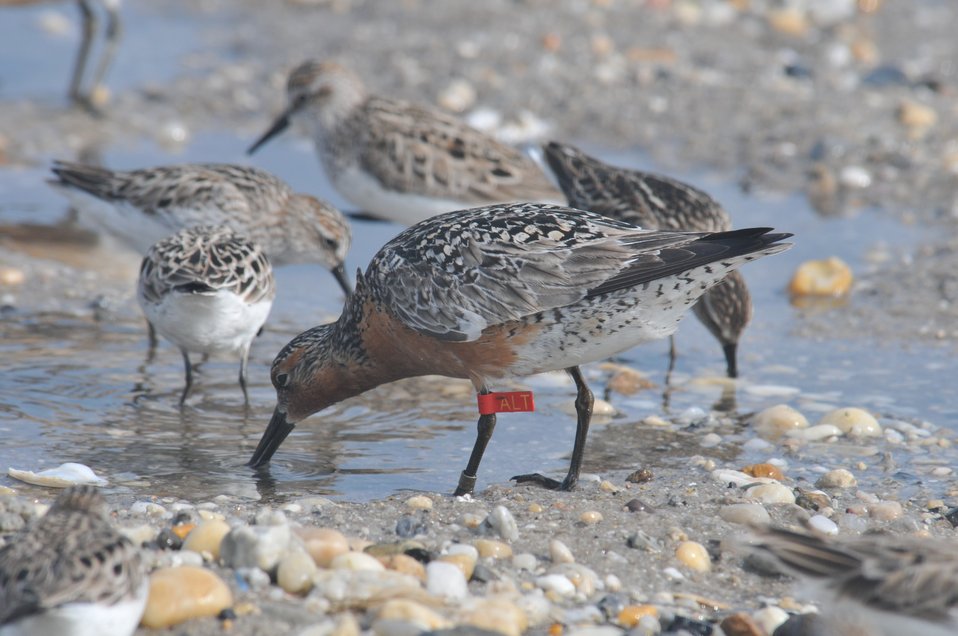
Red Knot

Mispillion Harbor, Delaware.